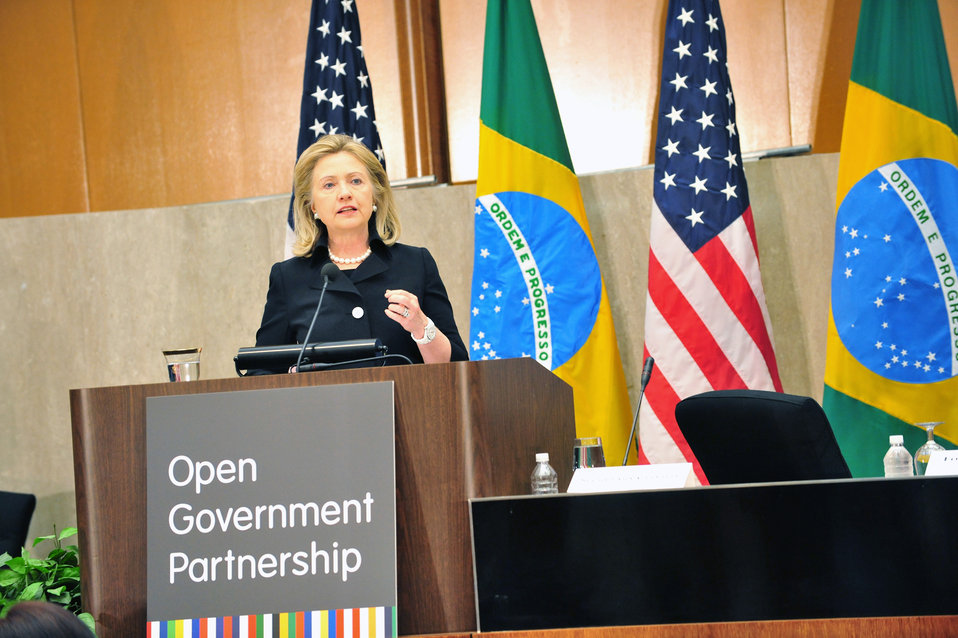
Secretary Clinton Delivers Remarks at Open Government Partnership High-Level Meeting

U.S. Secretary of State Hillary Rodham Clinton delivers remarks at the Open Government Partnership High-Level Meeting, at the U.S. Department of State in Washington, D.C., on July 12, 2011.